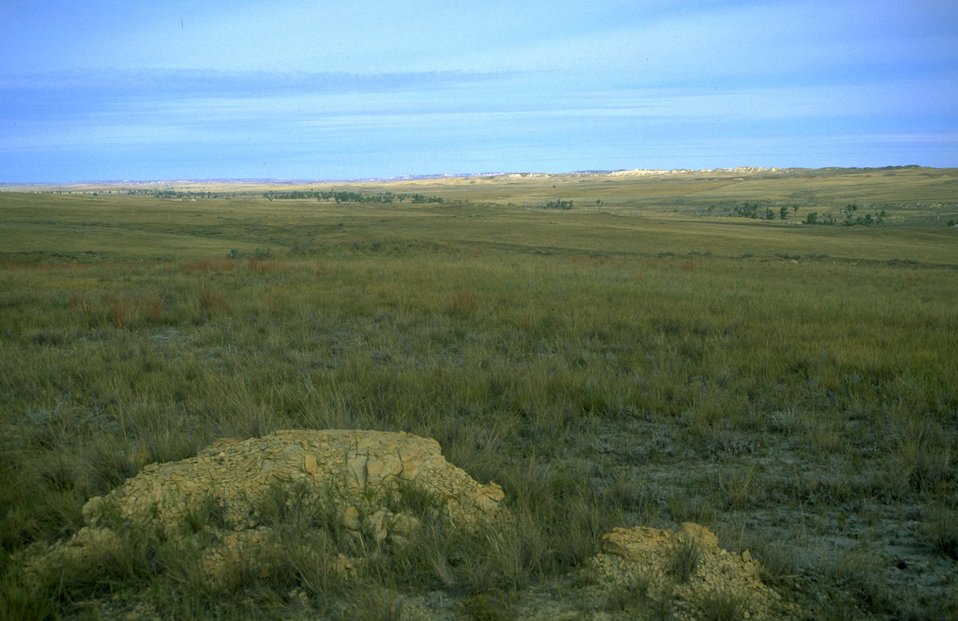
Eastern Montana prairie with rock formation in foreground